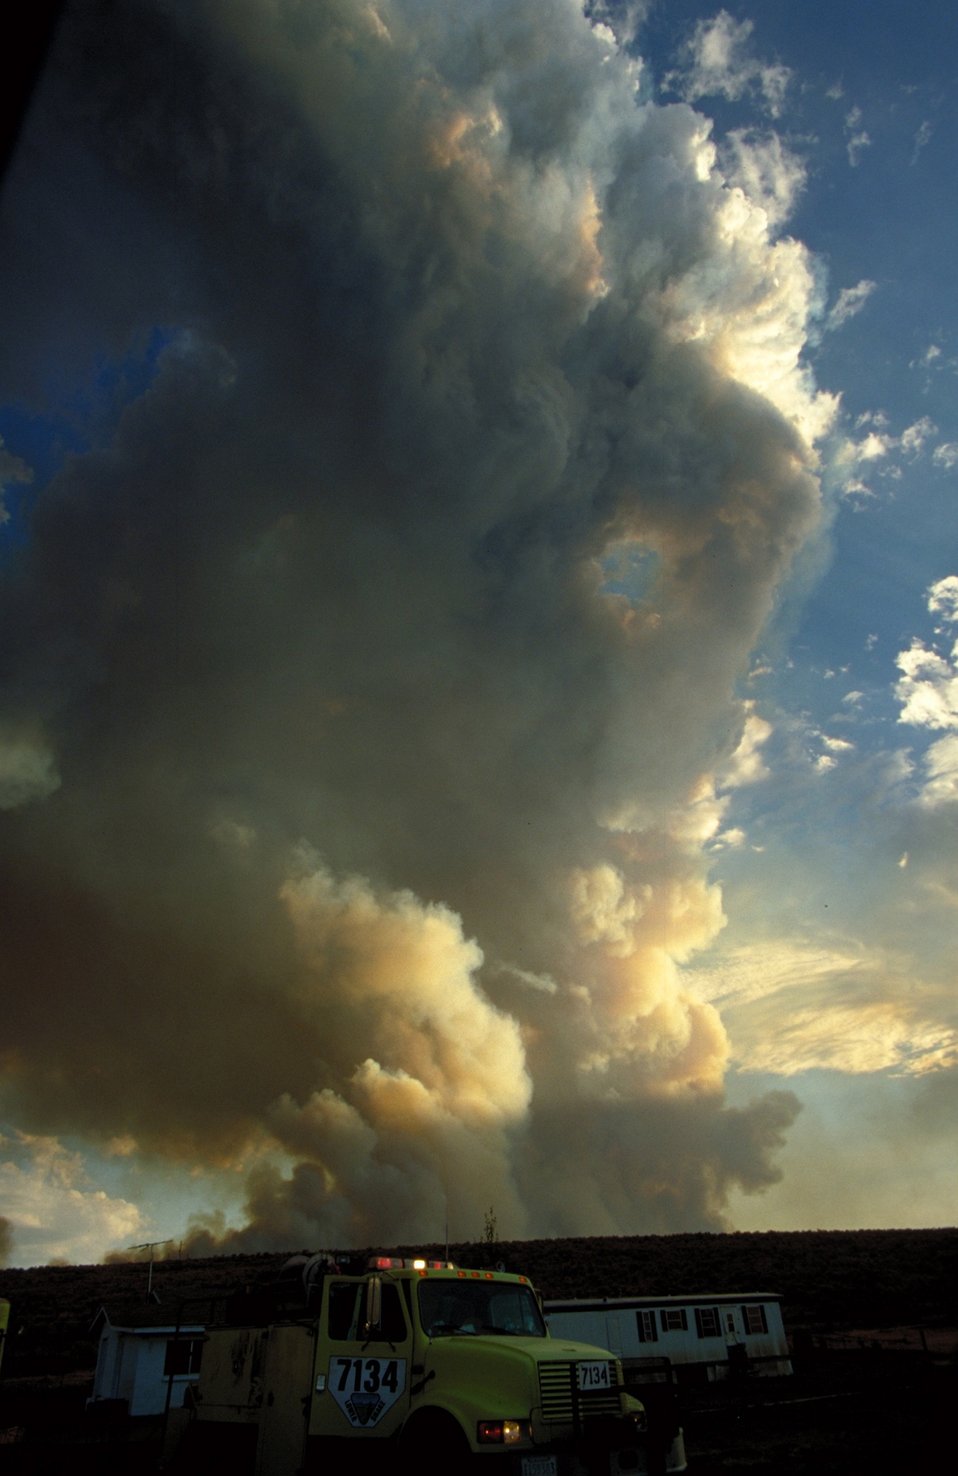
Smokey sky Fire Season 2000 Lower Snake River District LSRD